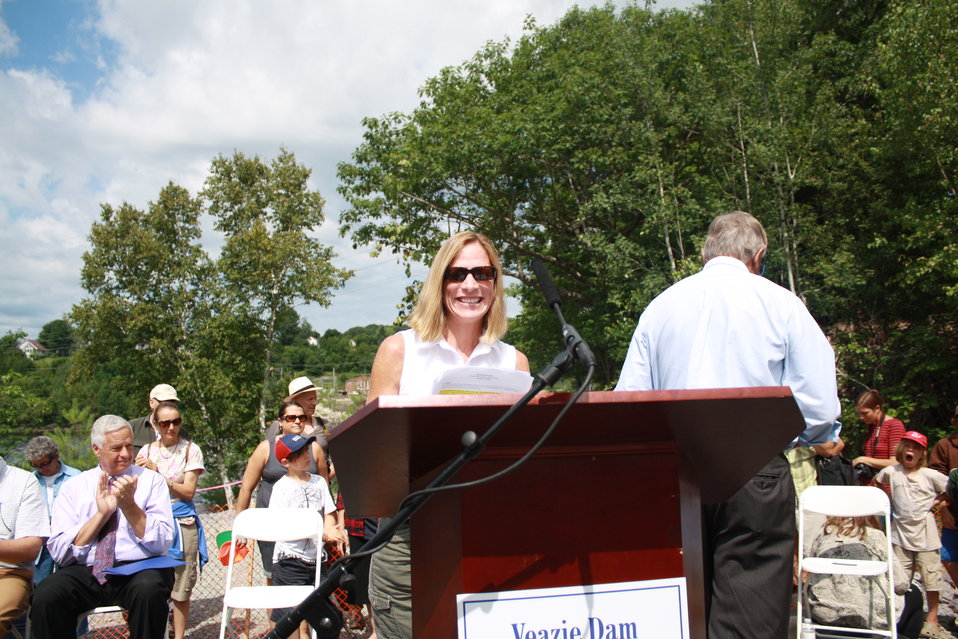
Veazie Dam Removal

U.S. Fish and Wildlife Service Northeast Regional Director Wendi Weber.